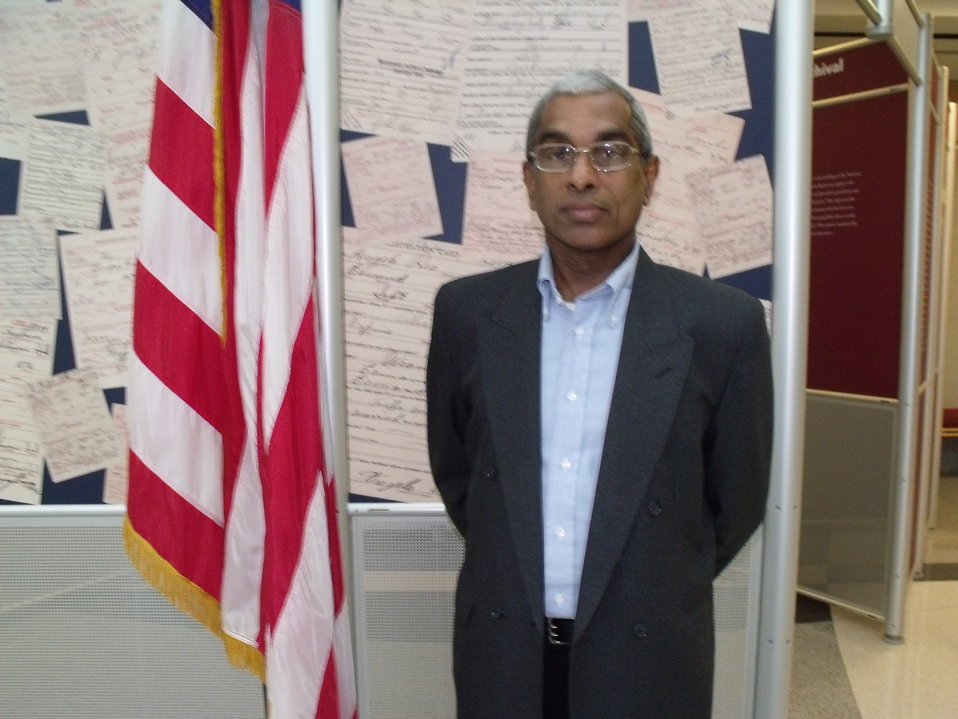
New Citizens